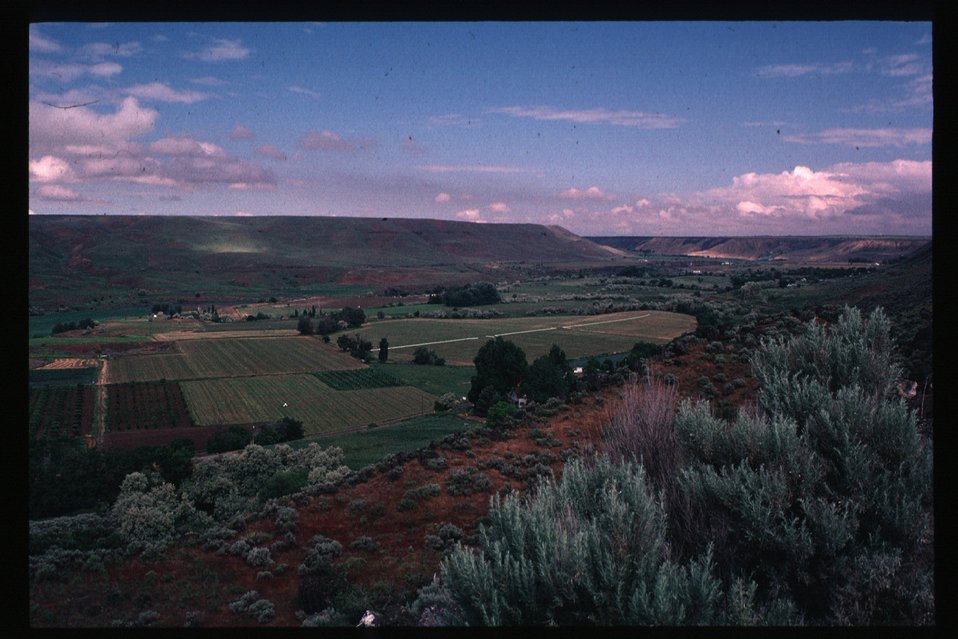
Water falls Rapids Recreation Scenic Snake River Jarbidge Field Office LSRD Lower Snake River District